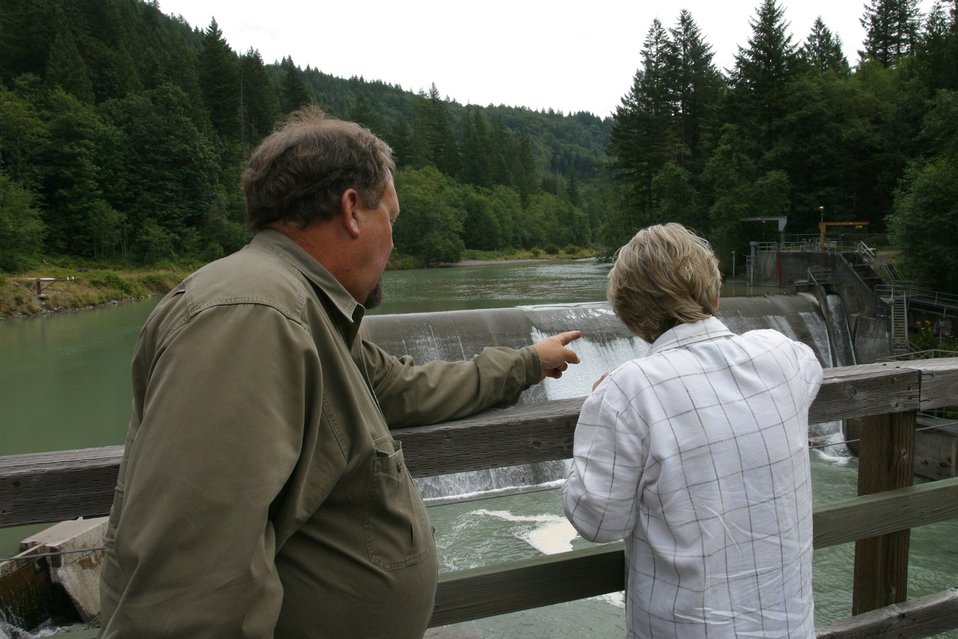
John Esler with PGE describes features of the Marmot Dam to BLM Direcor, Kathleen Clarke. Marmot Dam on the Sandy River is scheduled to be removed in 2006.